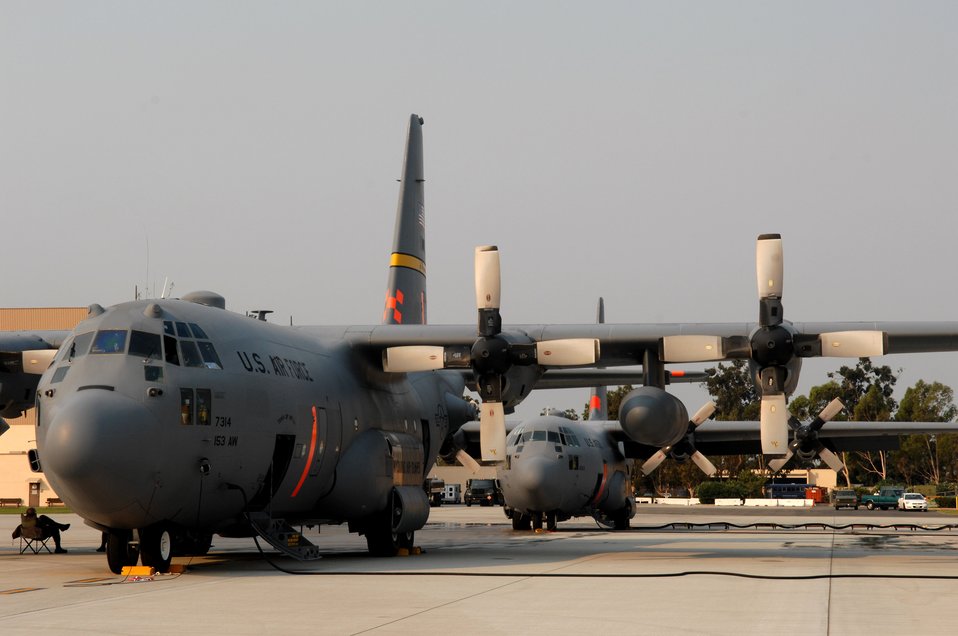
Guard, Reserve aid in California firefighting efforts

A pair of C-130 Hercules aircraft await deployment to support the California firefighting efforts Oct. 25 at Channel Islands Air National Guard Base, Calif. Air Force Reserve Command and Air National Guard Airmen are participating in the Southern California firefighting effort.